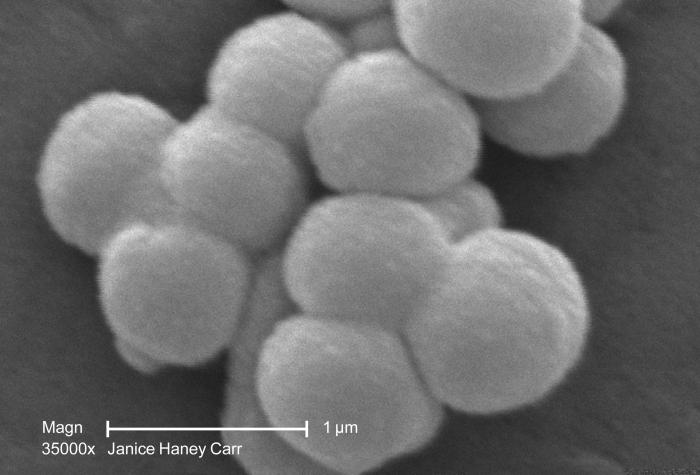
Under a very high magnification of 35,000X, this scanning electron micrograph (SEM) revealed a cluster of Gram-positive, beta-hemolytic Group C Streptococcus sp. bacteria.